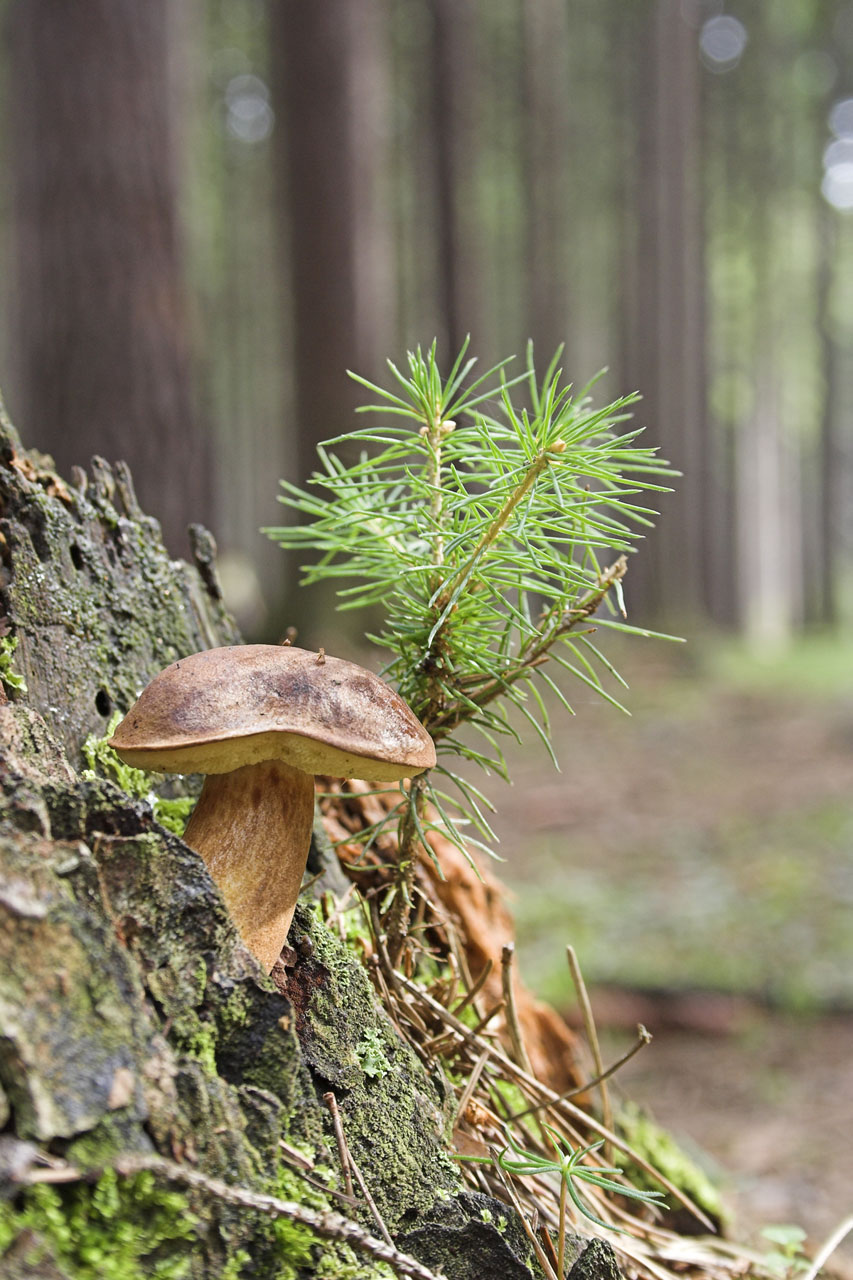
Wild mushroom

Close up image of tiny wild mushroom.